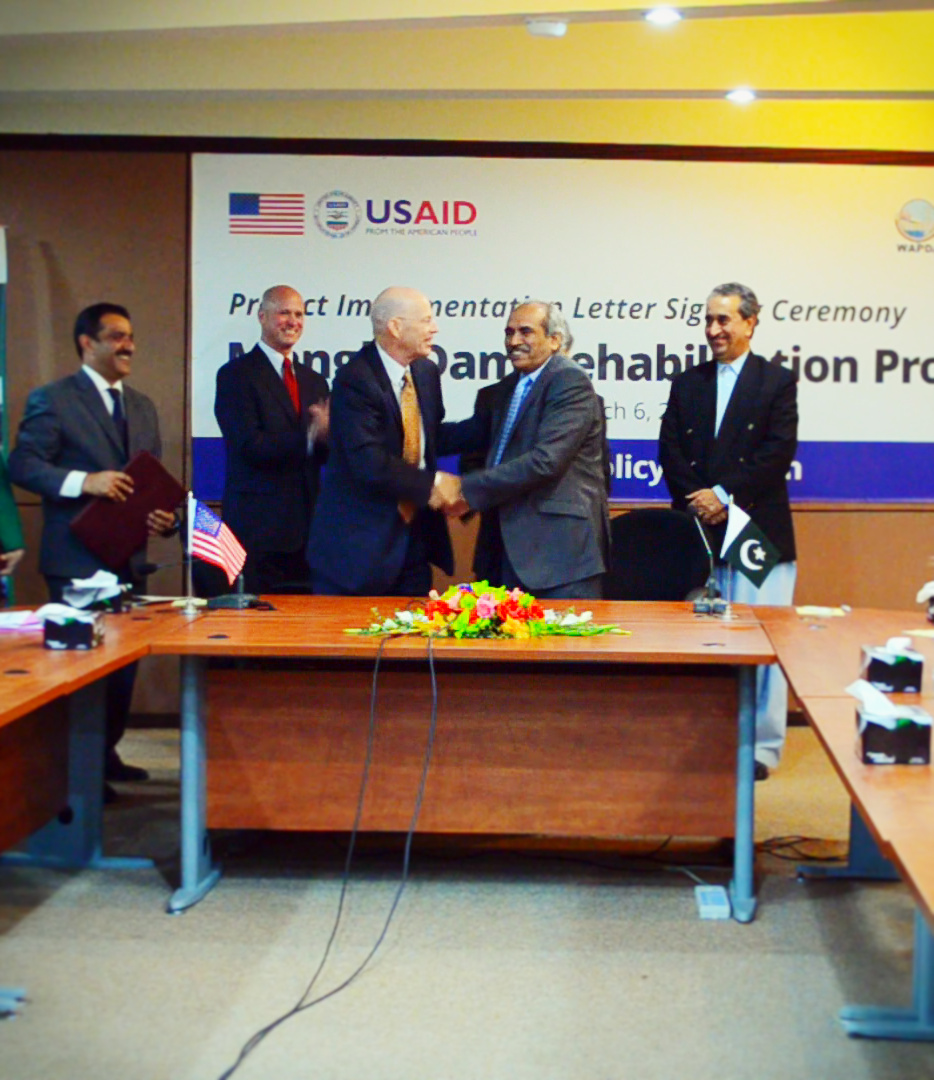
USAID Mission Director and Chairman WAPDA shaking hands after signing of the Mangla accord